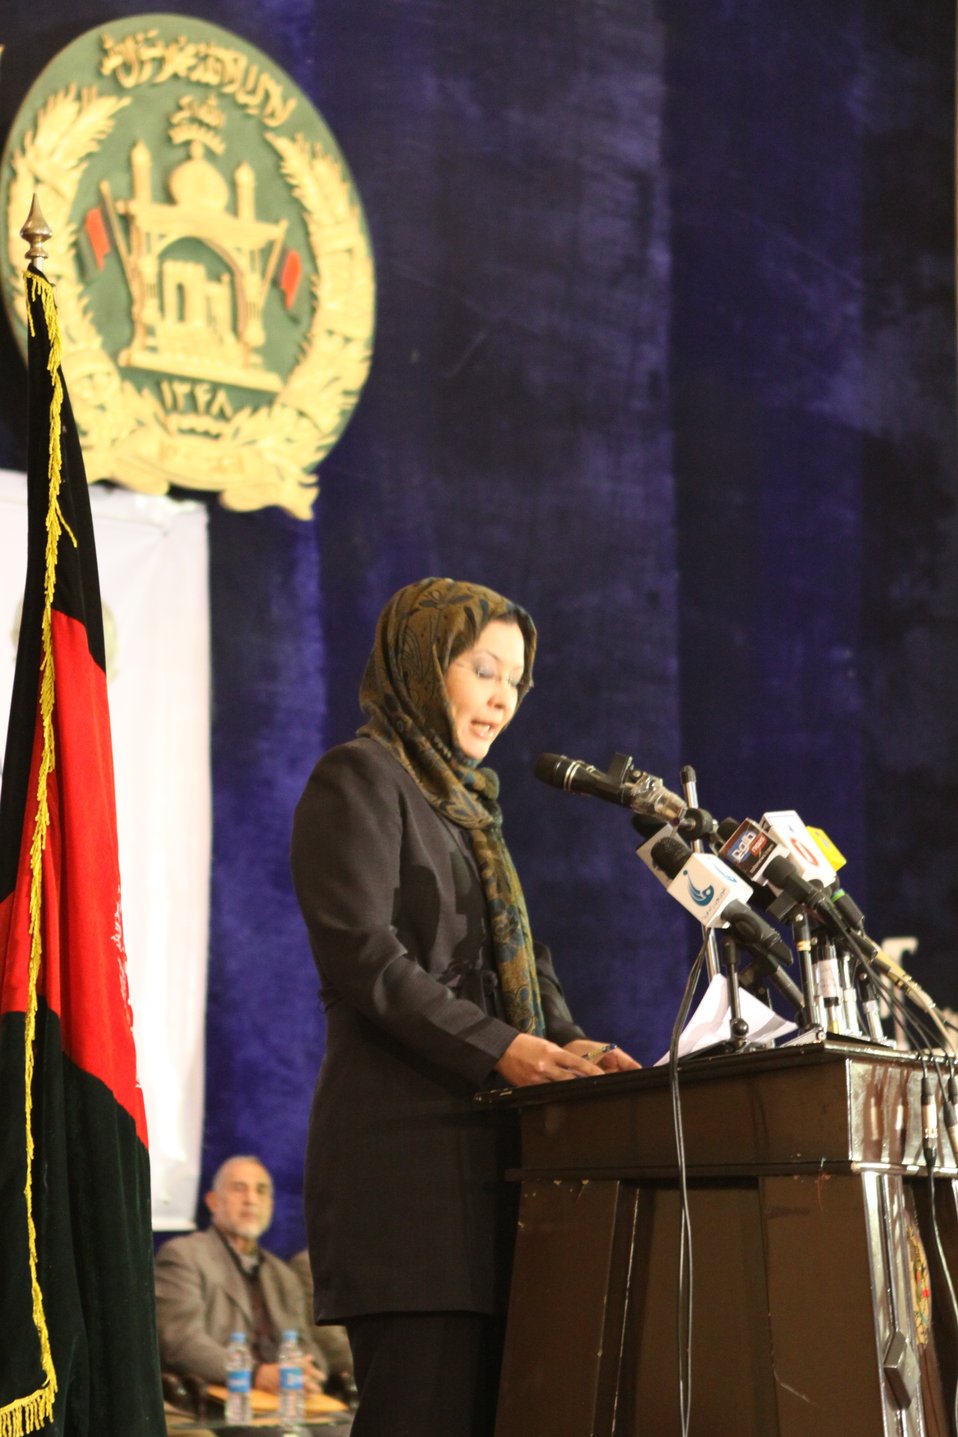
Community Health Workers Celebrated

Acting Minister of Public Health Dr. Suraya Dalil addresses the audience.